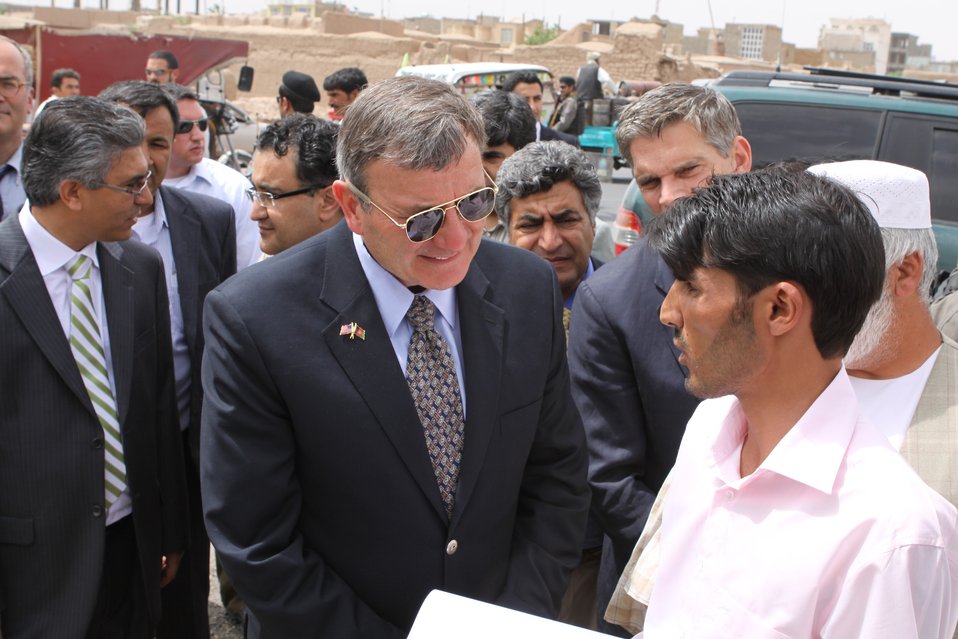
100525 Hirat Marble Conference 617